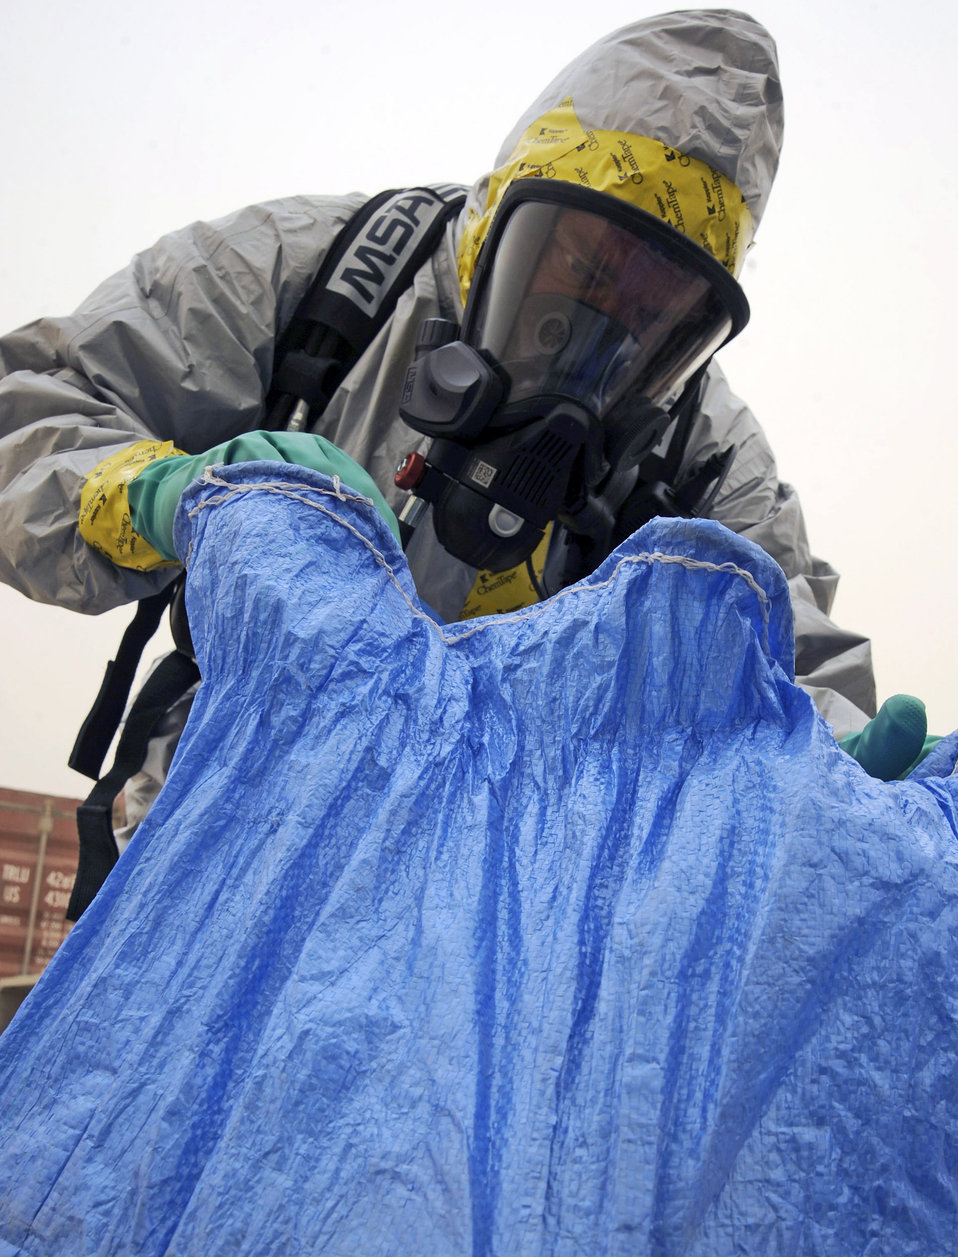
Inspecting the mail

Tech. Sgt. Steve Gaunt looks through a bag of mail to see if there are any suspicious packages recently at Camp Stryker, Iraq. All mail that comes into Baghdad that is improperly labeled, doesn't have a return address or gets lost in the system has to be inspected before it can be processed and go to its intended destination. Sergeant Gaunt is deployed from Alabama Air National Guard's 117th Air Refueling Wing, and is a native of Marietta, Ga.